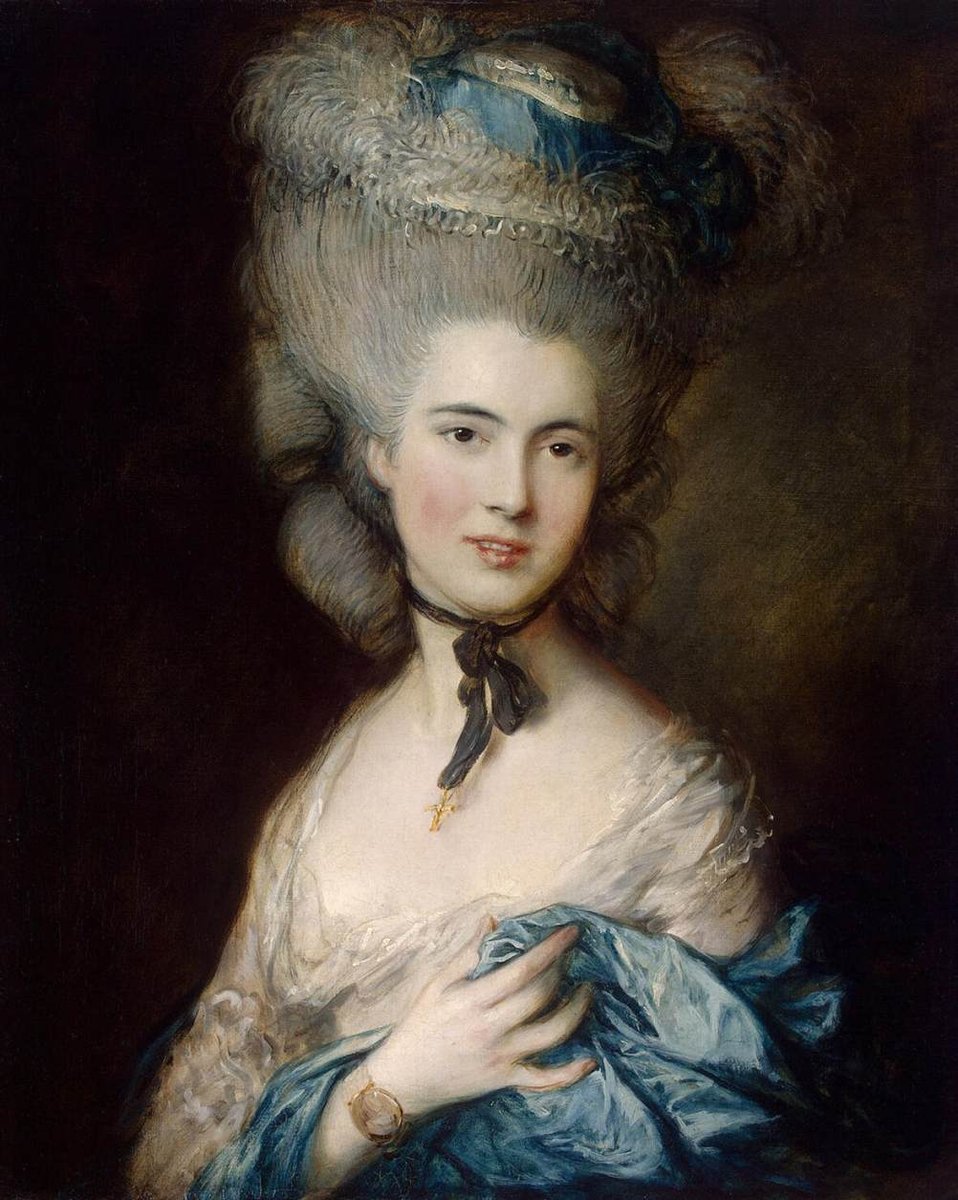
Thomas Gainsborough - Portrait of a Lady in Blue - WGA8414